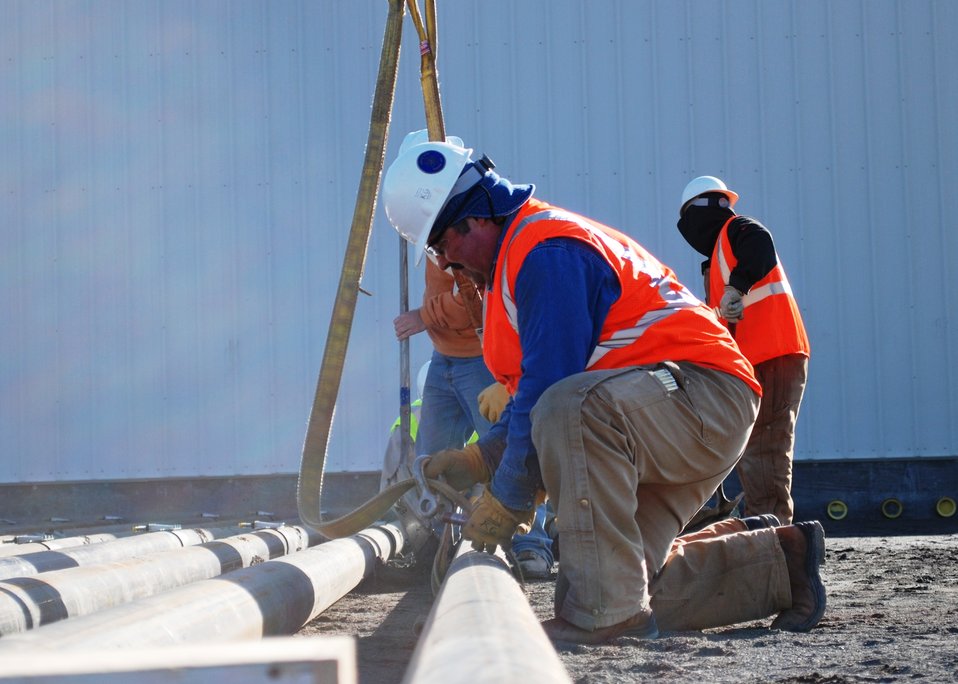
Laying Piping for DX Groundwater Treatment Facility

Workers lay piping that will carry groundwater between a series of wells in the 100 Area of the Hanford Site and the DX Groundwater Treatment Facility. Workers are laying approximately 45 miles of piping that will connect a network of 53 wells to the facility; 14 of the 53 wells have already been installed with Recovery Act funding.